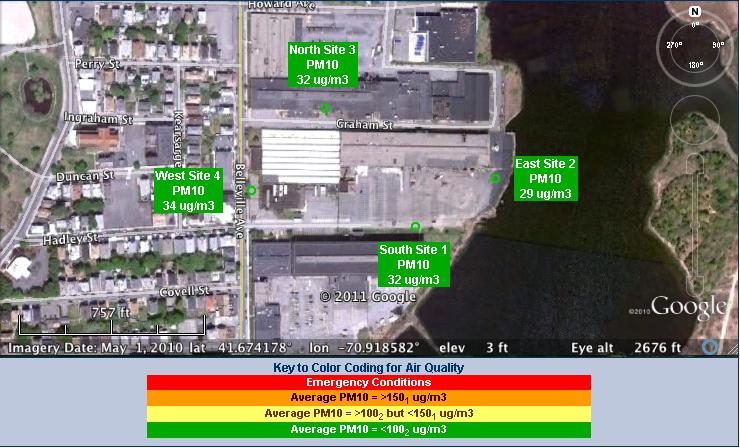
Example of Aerovox Air Data taken from June 8, 2011

This is a bird's eye view of the particulate matter (PM) data that EPA is reporting daily about for the duration of the Aerovox Mill Demolition.

To receive the daily updates follow:
twitter.com/#!/EPAaerovox

You don't even need twitter! To get updates on your phone, simply text: 'follow EPAaerovox' to '40404'